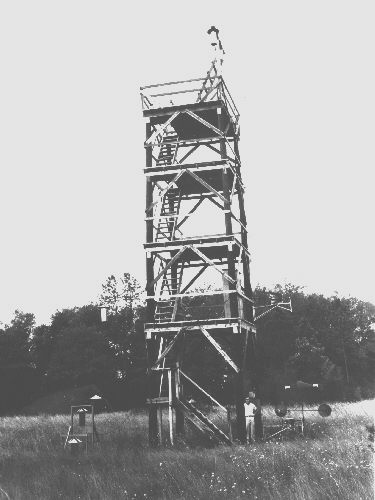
Newton Field Station